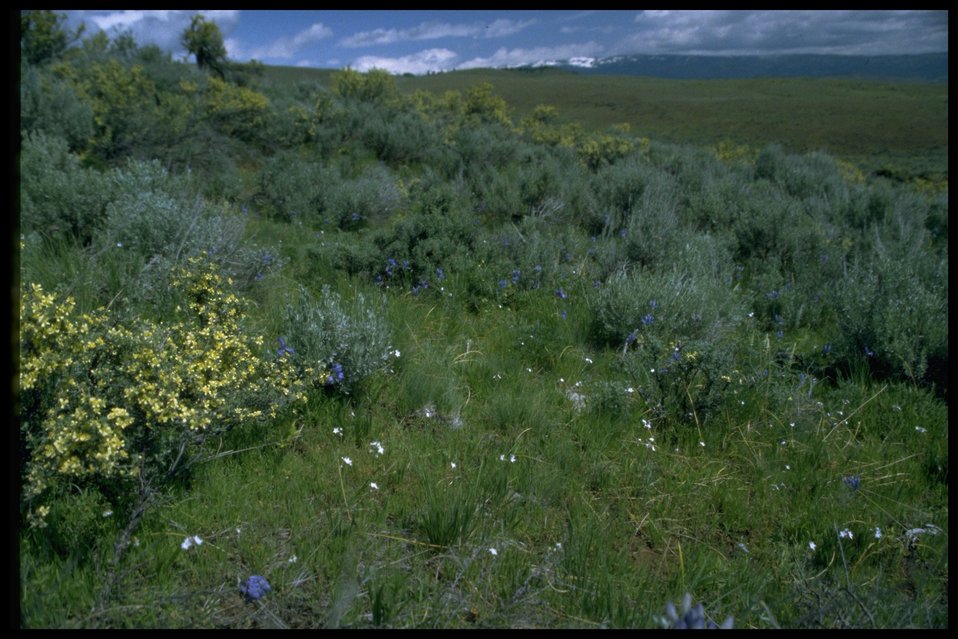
Farshot of Big Sagebrush - Bitterbrush habitat.